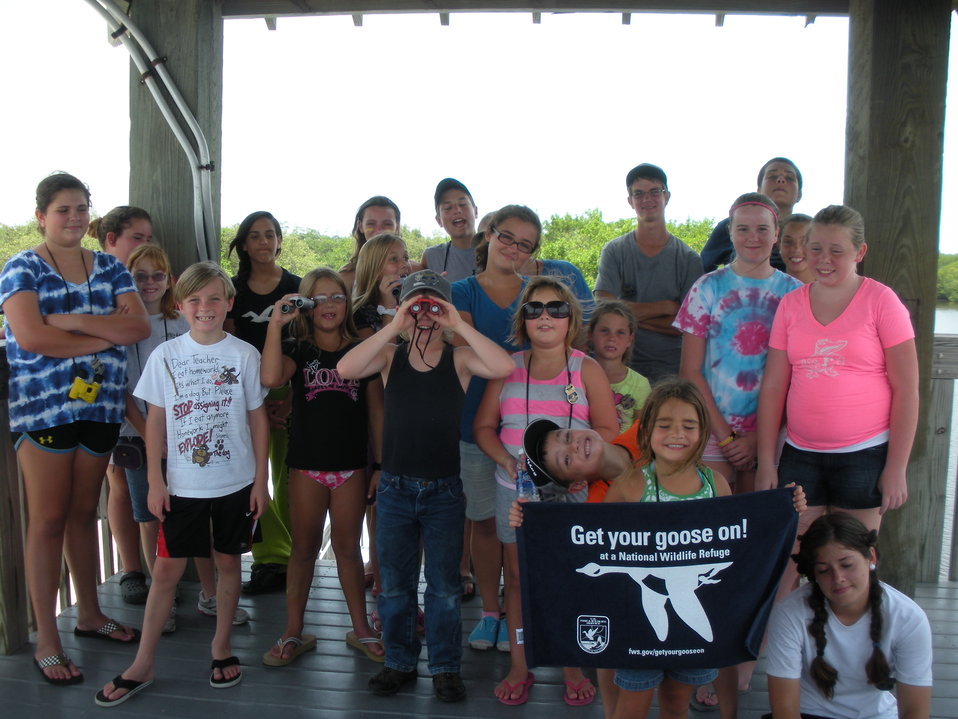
Get Your Goose On!

Taken at Ding Darling National Wildlife Refuge.